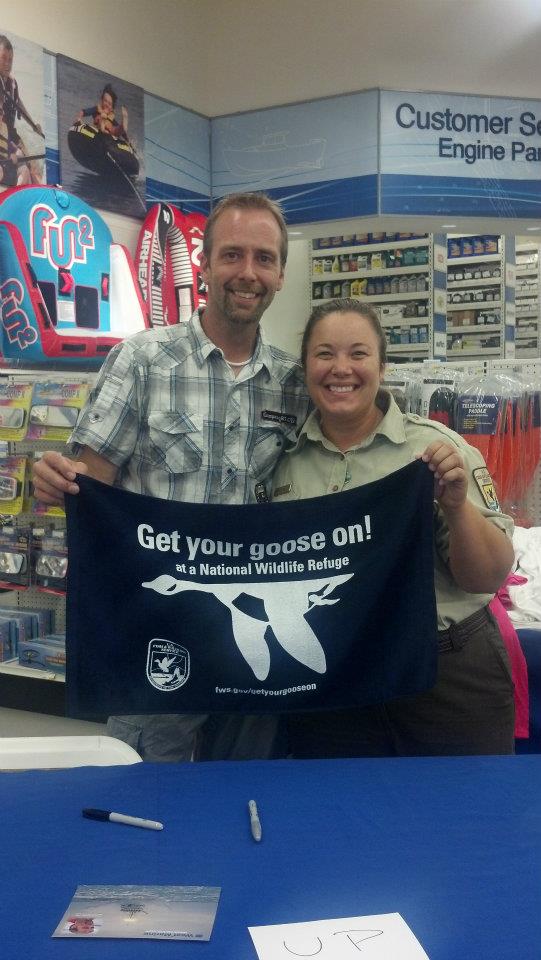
Get Your Goose On!